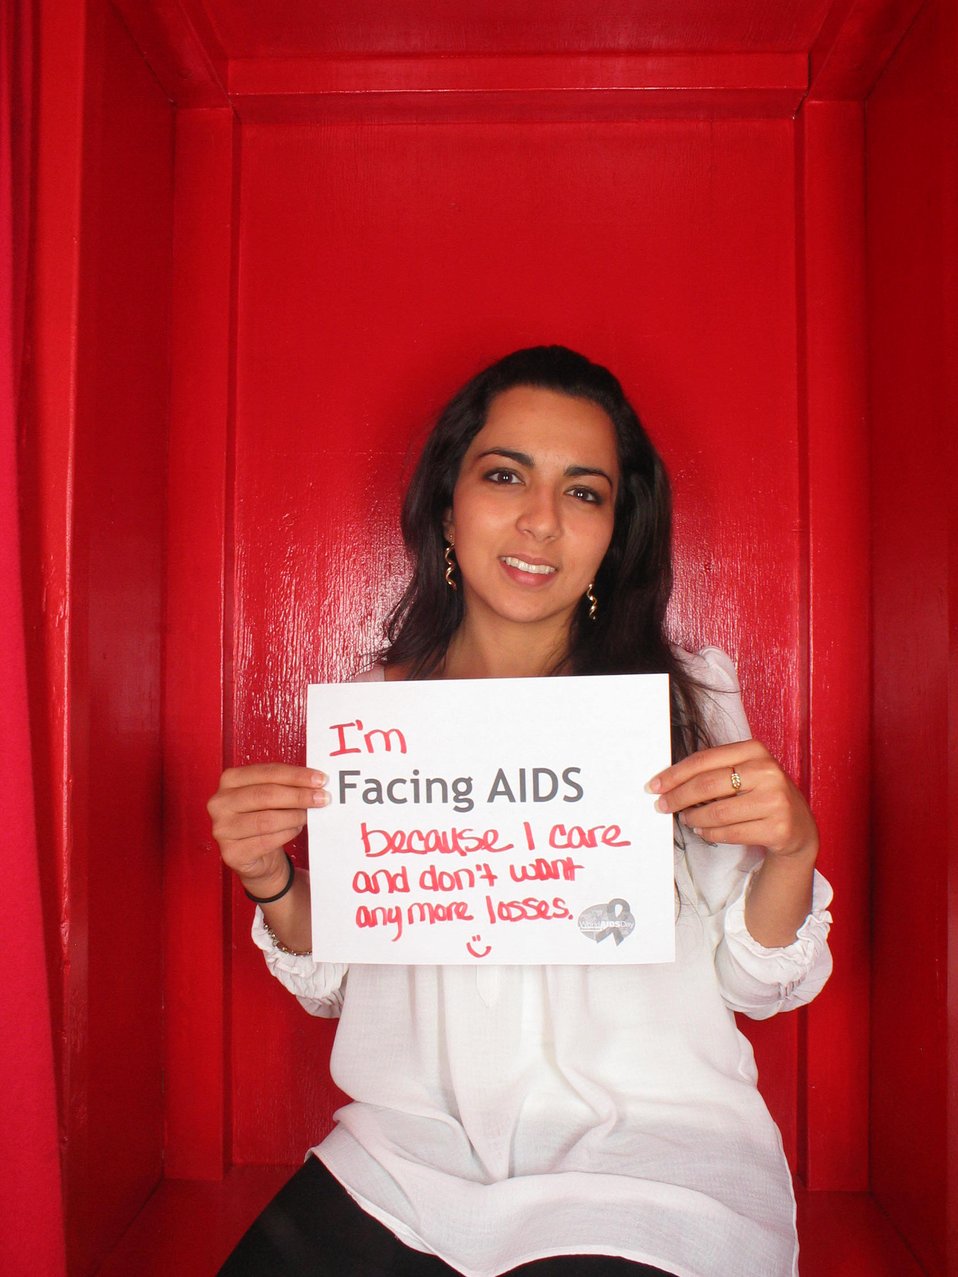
I'm Facing AIDS because I care and don't want anymore losses.